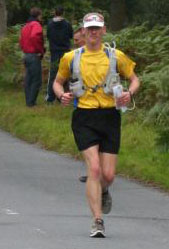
UK Ultramarathon

Lt. Col. Chris Bennett, 100th Operations Support Squadron commander at Royal Air Force Station Mildenhall, England, makes his way along country roads between London and Brighton during an ultra-marathon on Sept. 30, 2012. The ultra-marathon was 61.2 miles and participants had to find their own way to the finish line aided by a map and compass.